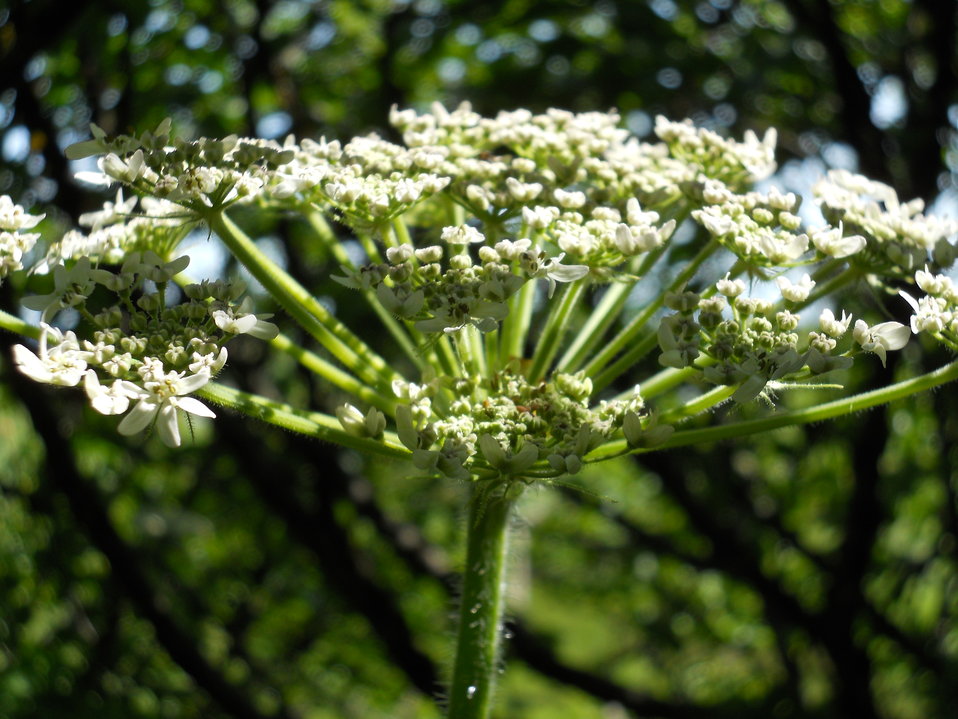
Pushki Inflorescence

Credit: USFWS
Photo taken by a Salmon Camp participant during a nature photography activity.

Source and Contact: Kodiak National Wildlife Refuge